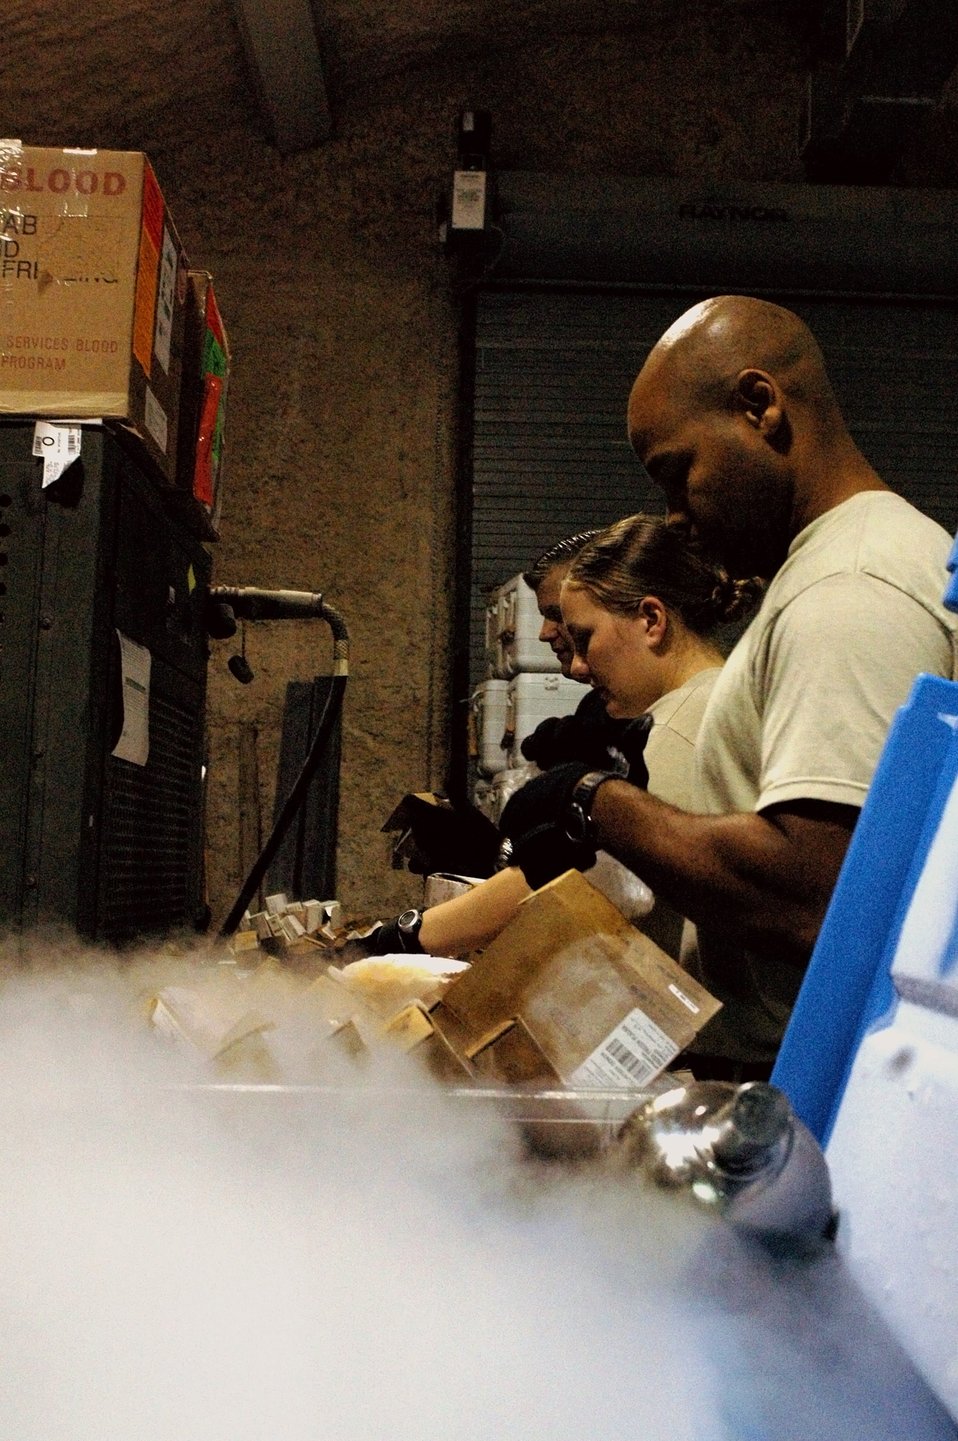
Pumping blood from the 'heart'

Tech. Sgt. Joseph Pinkney (from front), Senior Airmen Beth Gunn and Thomas Sullivan inspect and pack fresh frozen plasma Nov. 20 for a shipment from their Southwest Asia base to Balad Air Base, Iraq. Dry ice is used to keep the FFP frozen and prevent spoilage. Sergeant Pinkney and Airmen Gunn and Sullivan are with the 379th Expeditionary Medical Group's blood transshipment center and are deployed from Langley Air Force Base, Va.